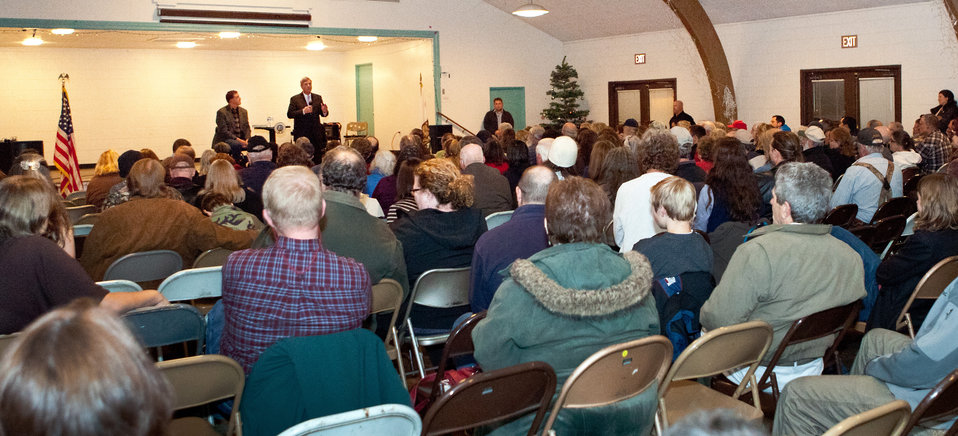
Agriculture Secretary Tom Vilssck speaks at a community roundtable in Weaverville, CA on Dec. 10, 2012.